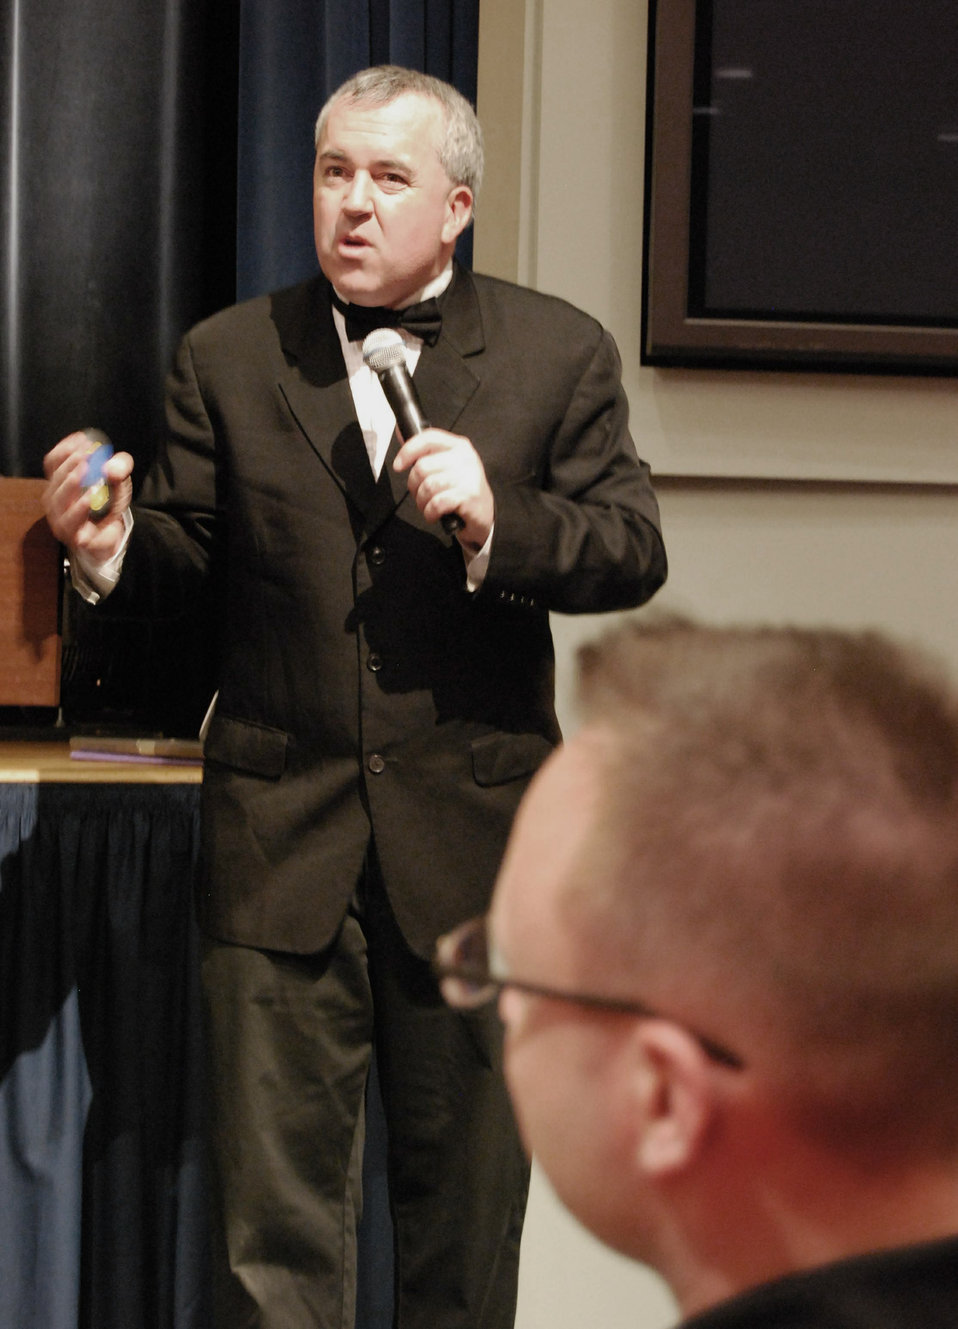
'Voices of Men' gives unique insight on sexual assault

Sexual assault awareness activist Ben Atherton-Zeman impersonates James Bond in his one-man show